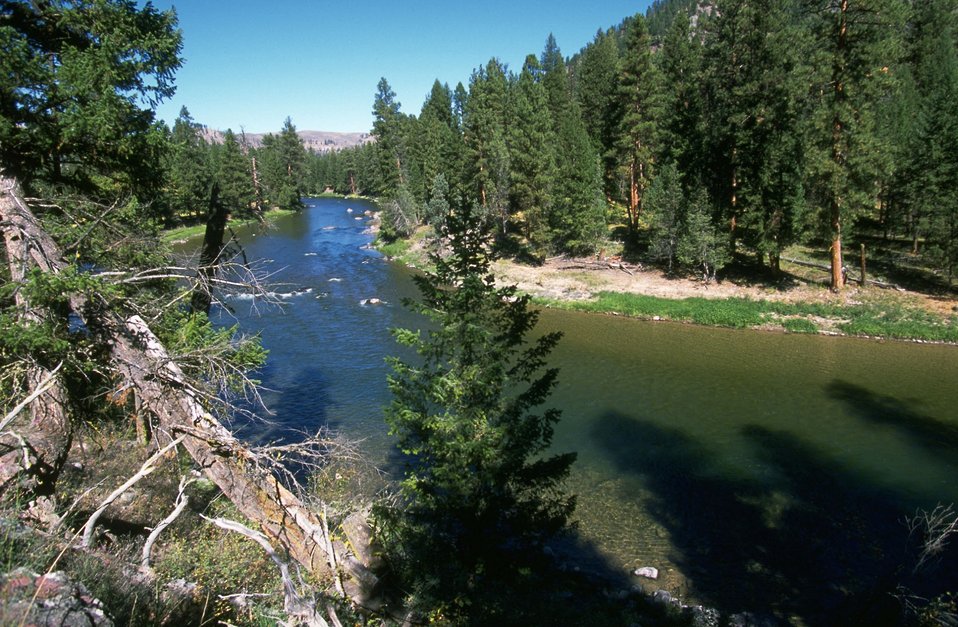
Blackfoot River